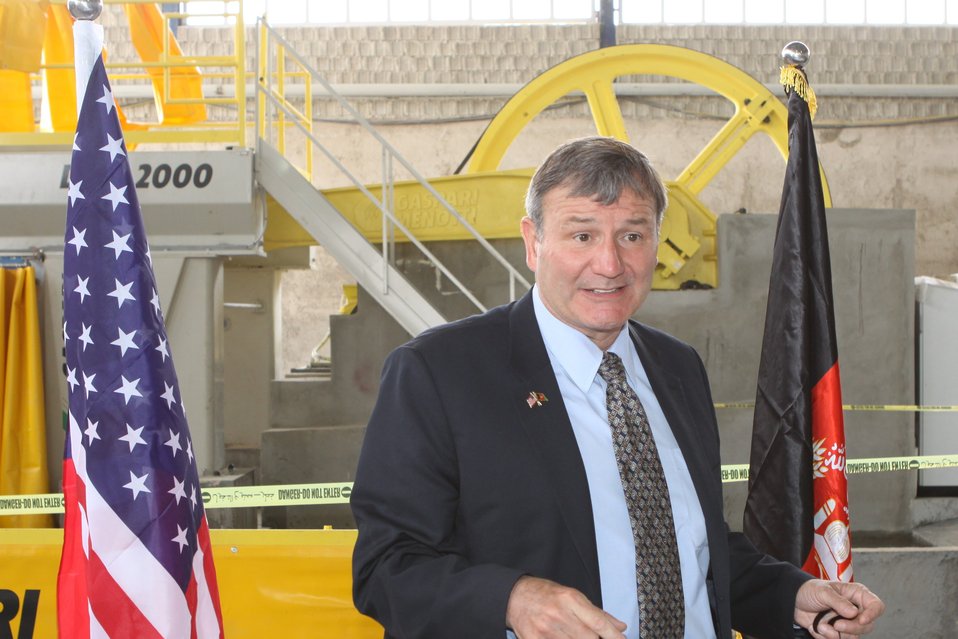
100525 Hirat Marble Conference 298